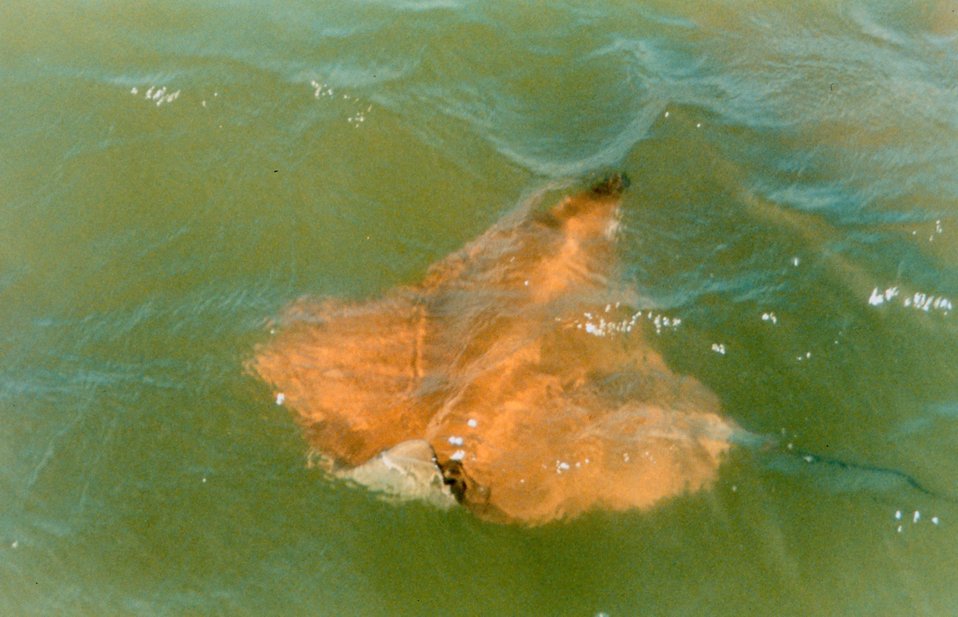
A Cow-nosed ray - Rhinoptera bonasus - near the surface, near the mouth of the Patuxent River.